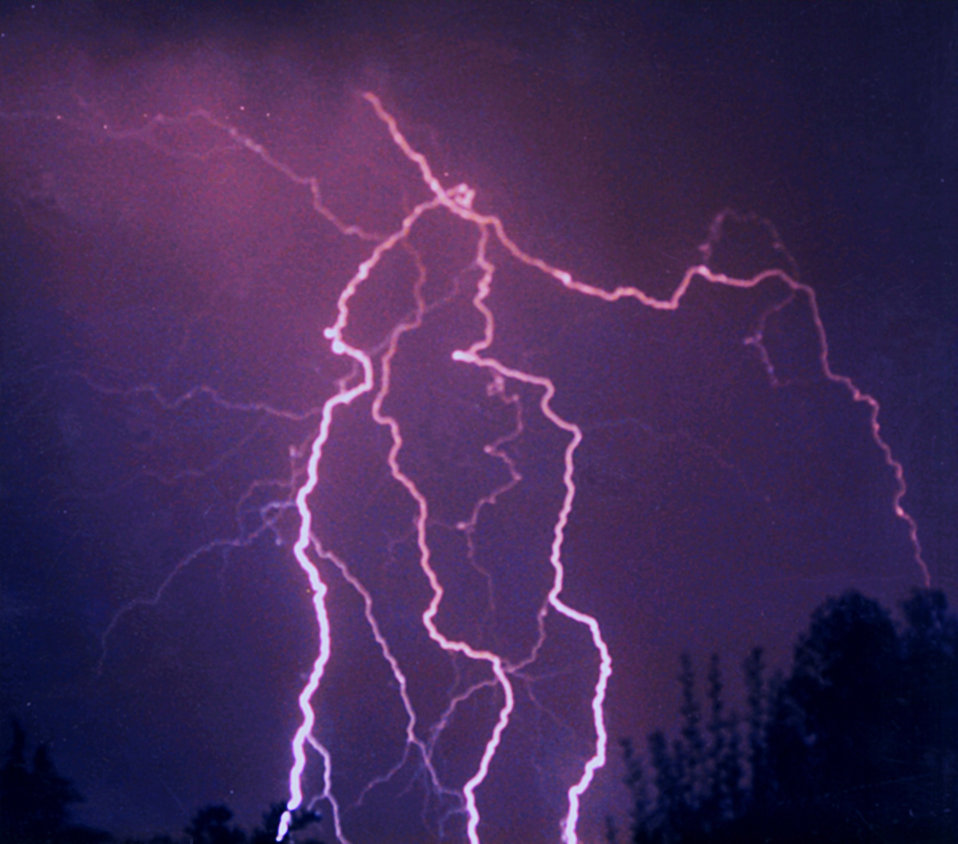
Many of Mr. Lear's lightning photographs are taken from the roof of his home. He has an array of six cameras that can be activated simultaneously in order to capture lightning images. These six cameras span the horizon. Mr. Lear is a welder by trade and has taken lightning photographs for many years as a hobby.